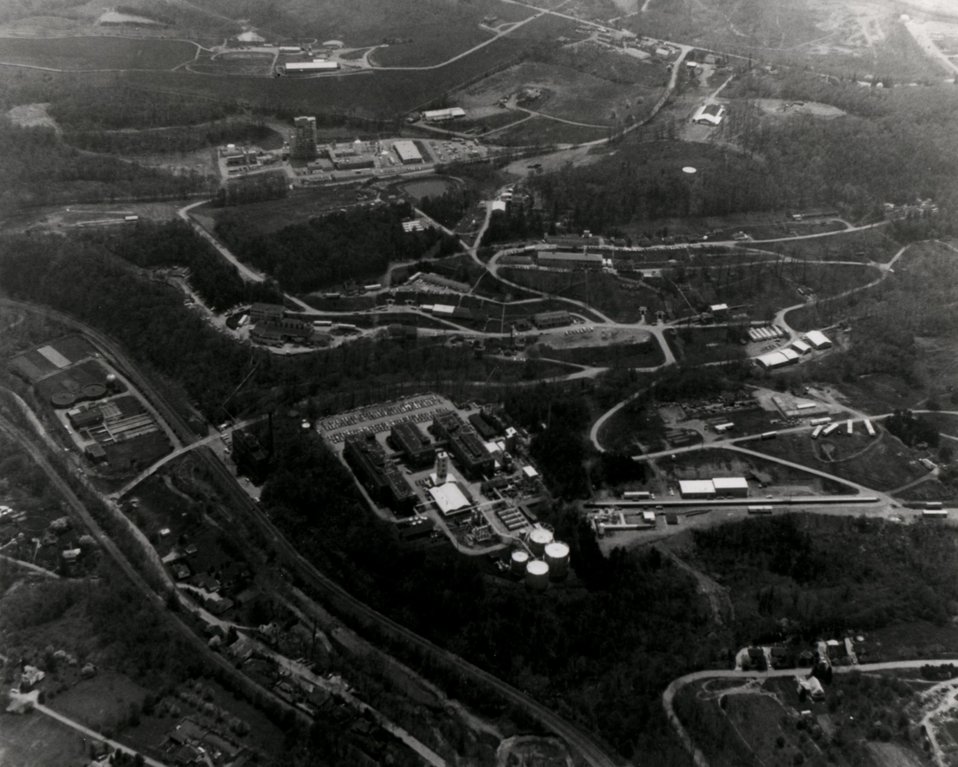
Aerial view of the Energy Research and Development Administration's Pittsburgh Energy Research Center located in Pittsburgh, Pennsylvania. Circa 1976.